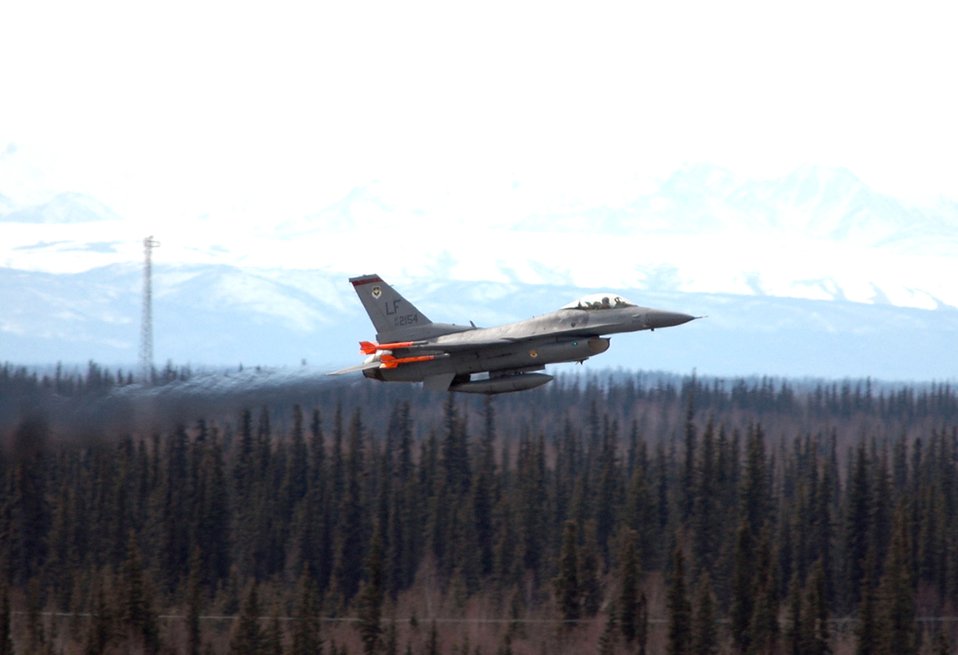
Exercise lets Airmen prepare for real thing

Friendly forces, such as this F-16 Fighting Falcon from the 63rd Fighter Squadron at Luke Air Force Base, Ariz., face a host of